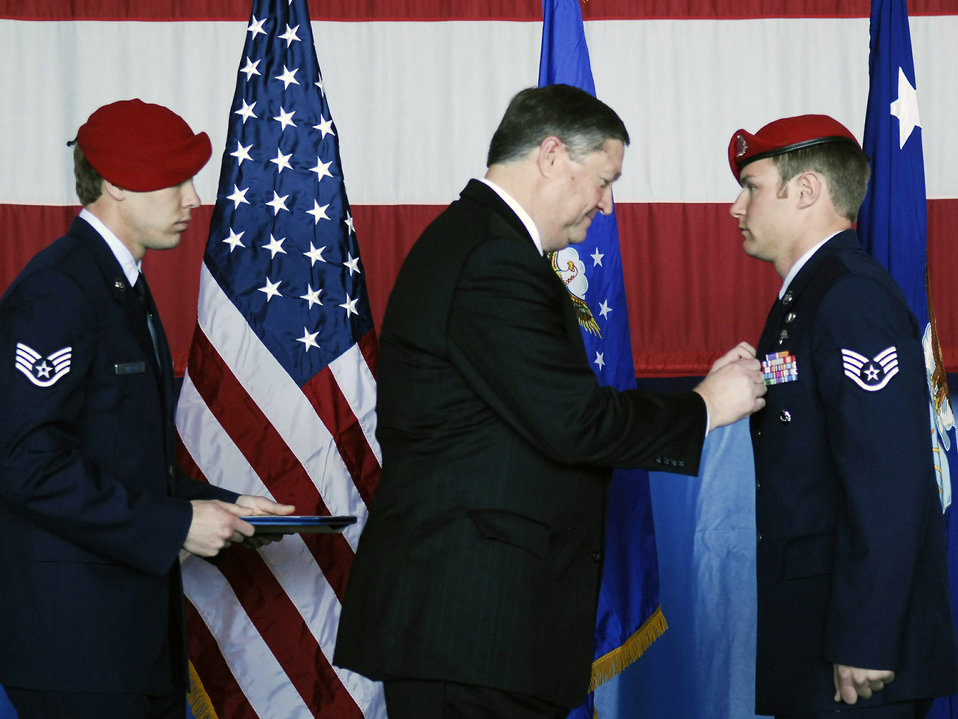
Combat controller receives Air Force Cross, Purple Heart

Secretary of the Air Force Michael B. Donley presents Staff Sgt. Zachary Rhyner the Air Force Cross March 10 at Pope Air Force Base, N.C. Sergeant Rhyner of the 21st Special Tactics Squadron received the medal for uncommon valor during Operation Enduring Freedom for his actions during an intense 6.5-hour battle in Shok Valley, Afghanistan, April 6, 2008.